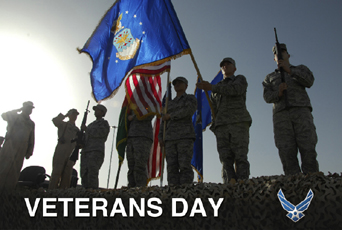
Veterans Day originally was called Armistice Day to remember the cessation of hostilities for World War I.